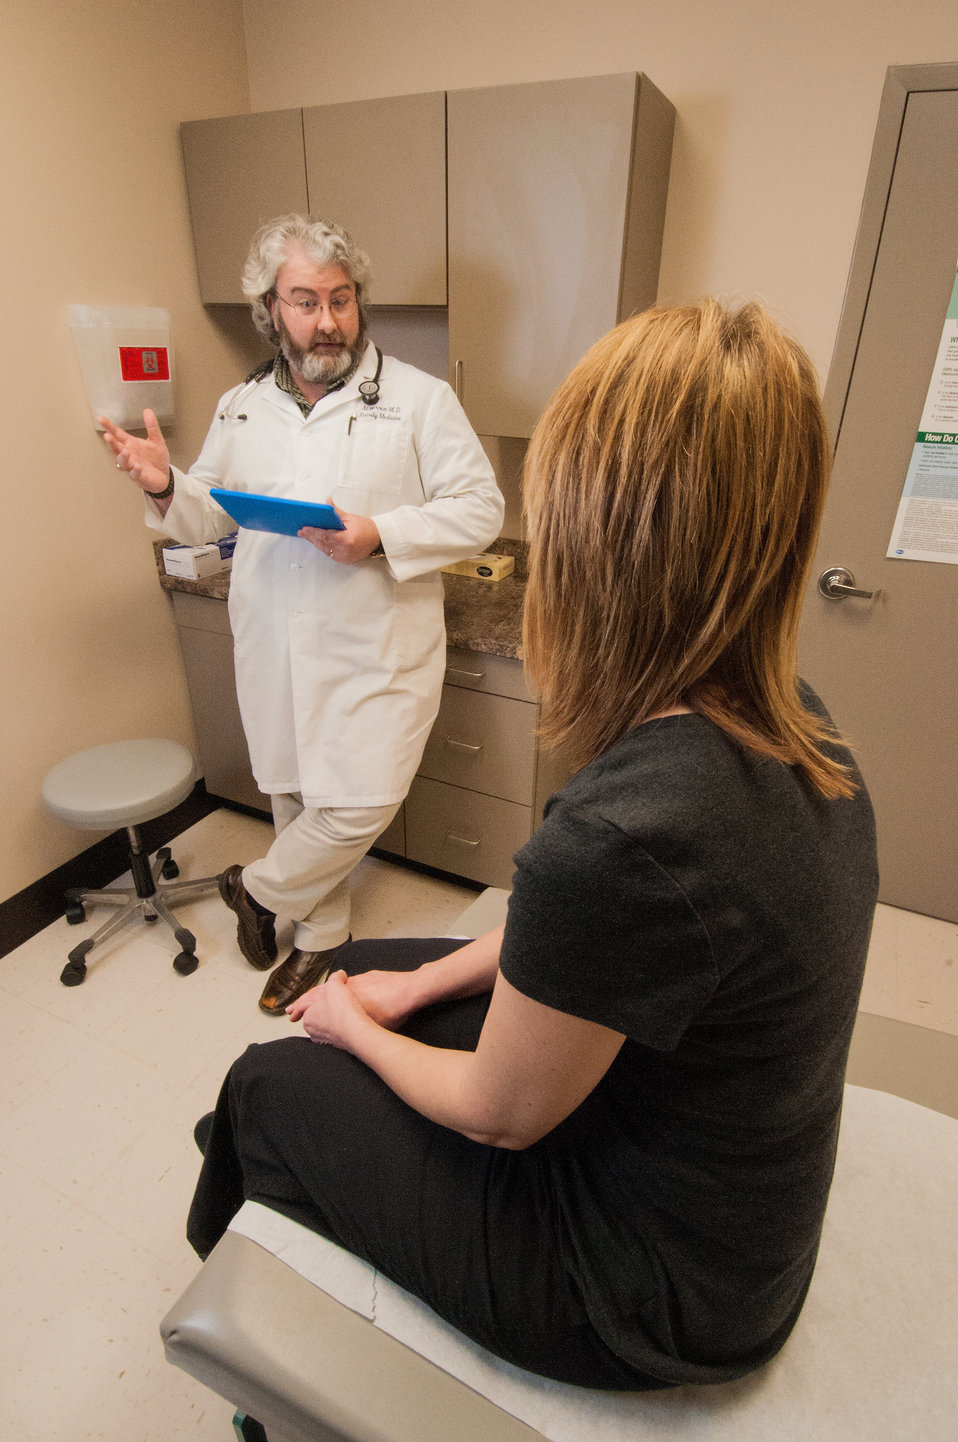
R.J. Taylor Memorial Hospital, Inc. Family Medicine Physician Dr. Albert Warren, MD consults with a patient and records the patient’s symptoms on an electronic tablet in Hawkinsville, GA on Mar. 6, 2013. The hospital is a licensed private, not-for-profit acute care facility providing emergency, specialty and primary health care in a rural area of Georgia that has a high percentage of people living below the state average poverty level and considered most economically distressed. The hospital has purchased an Electronic Medical Records System under an incentive program by the Federal government through the U.S. Department of Agriculture (USDA) Rural Development (RD) Community Facilities Loan (CF) that ensures fiscally responsive access to superior quality integrated health care.